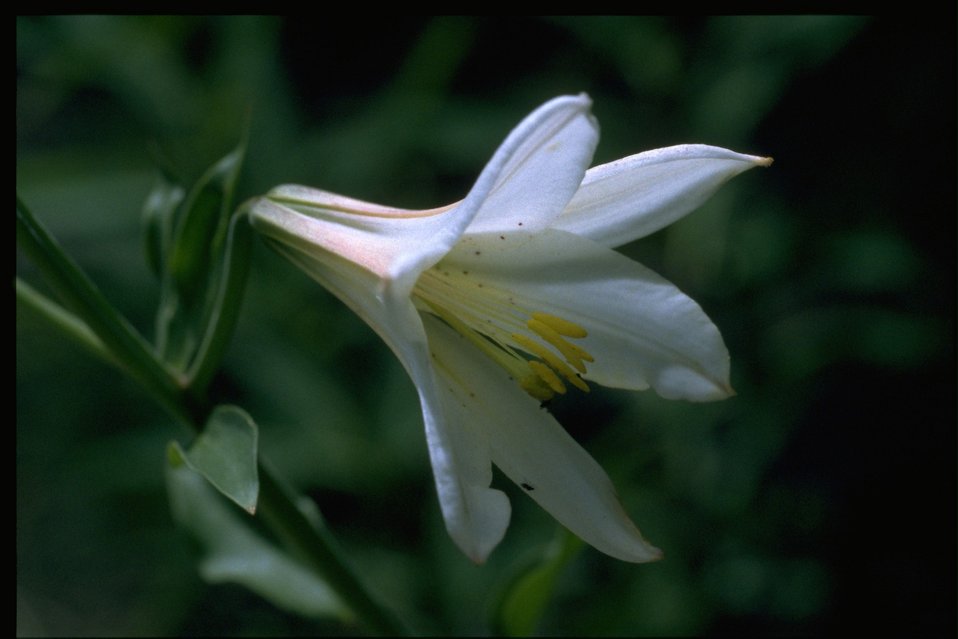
Closeup shot of Lilium washingtonianum.